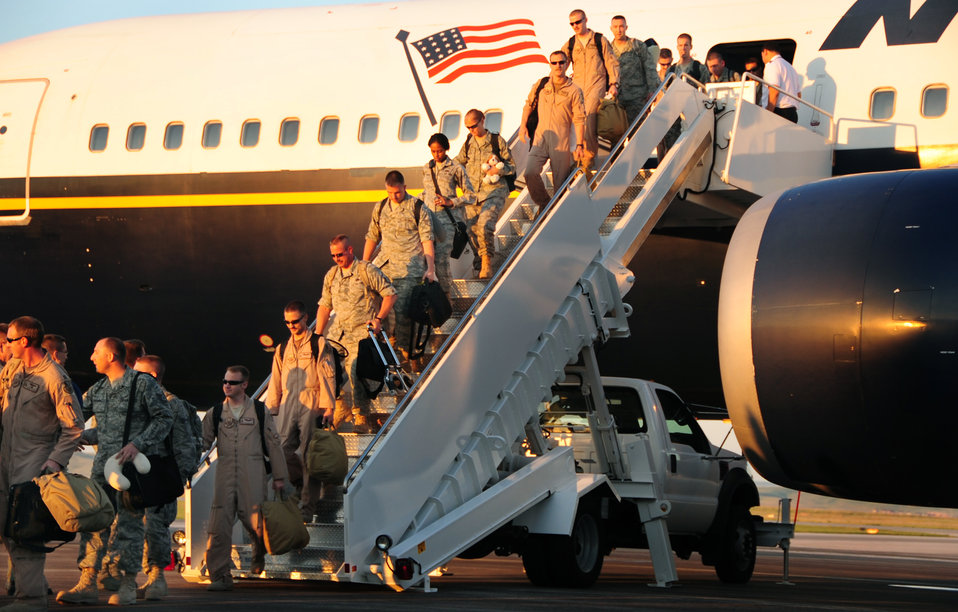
Welcome back

Airmen step off a Boeing 767 after returning from a six-month deployment to Southwest Asia July 28, 2010, at Ellsworth Air Force Base, S.D. Airmen were reunited with friends, family and co-workers in the morning with a second group of Airmen to arrive later in the day. Off camera, Col. Steven Hiss, 28th Bomb Wing vice commander, greets returnees.